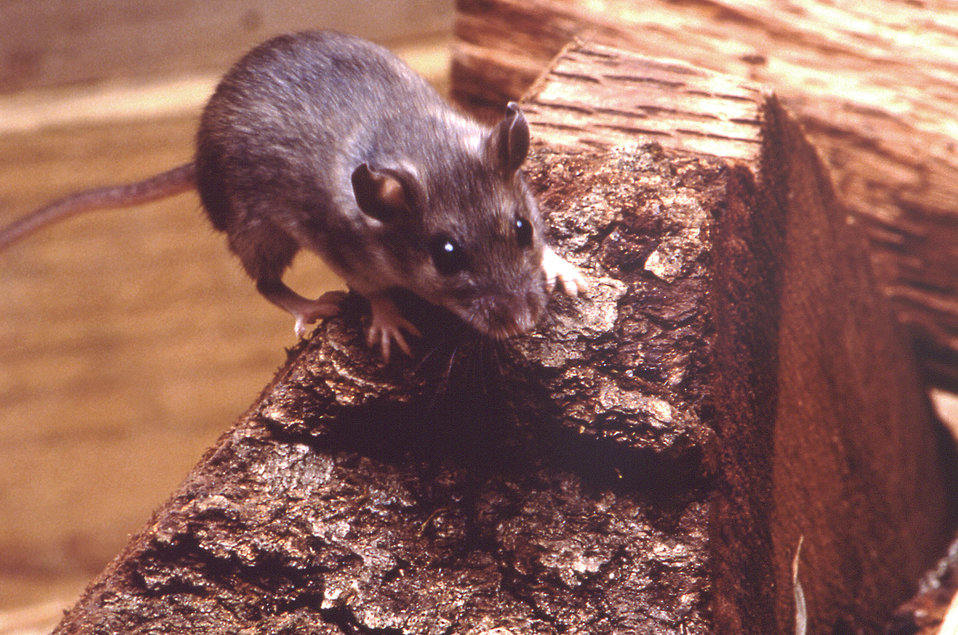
This image depicts a deer mouse, Peromyscus maniculatus which was perched atop a piece of chopped hardwood.